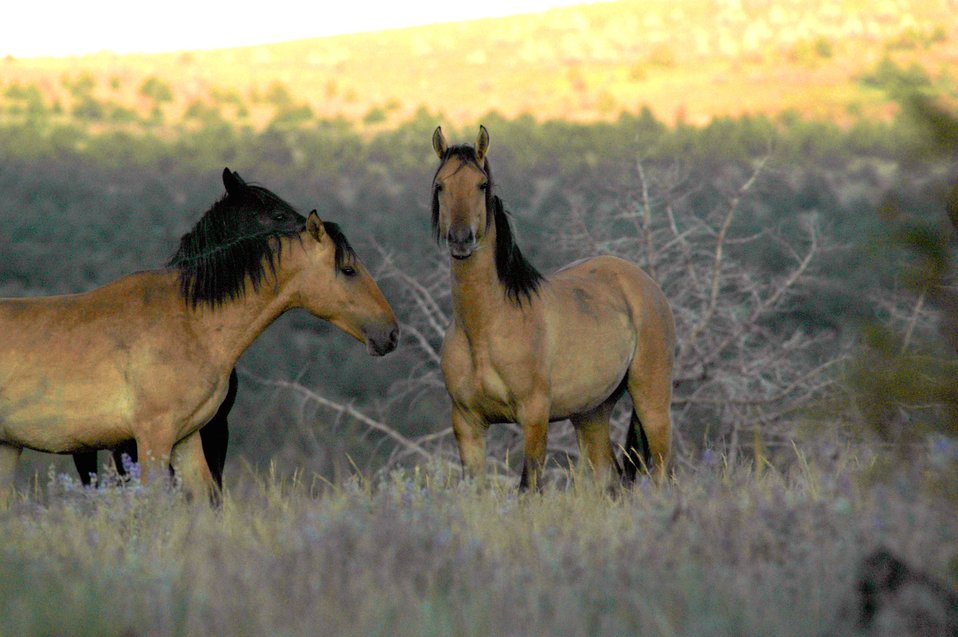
Kiger horses roam the plateaus of the Kiger Wildhorse Herd Management Area near Steens Mountain in Southeastern Oregon.